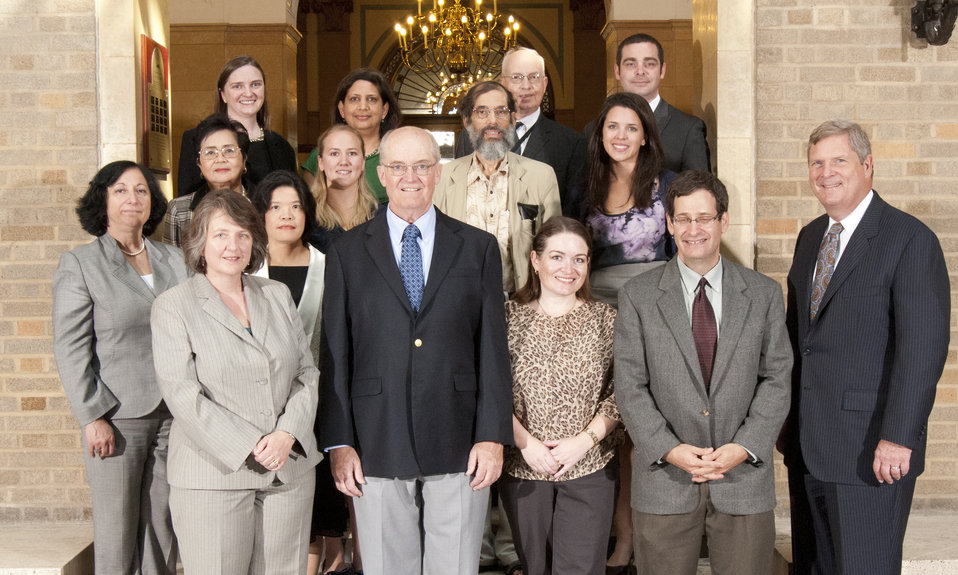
Agriculture Secretary Tom Vilsack and Deputy Agriculture Secretary Kathleen Merrigan with Honor Award Group STEC Team, Food Safety and Inspection Service (FSIS) on the patio of the U.S. Department of Agriculture in Washington, D.C. on Wednesday, Sept. 12, 2012. The STEC Team provided leadership to protect the U.S. food supply, through timely development and implementation of a robust science-based program for controlling non-0157 Shiga toxin-producing pathogenic E. coli in beef.